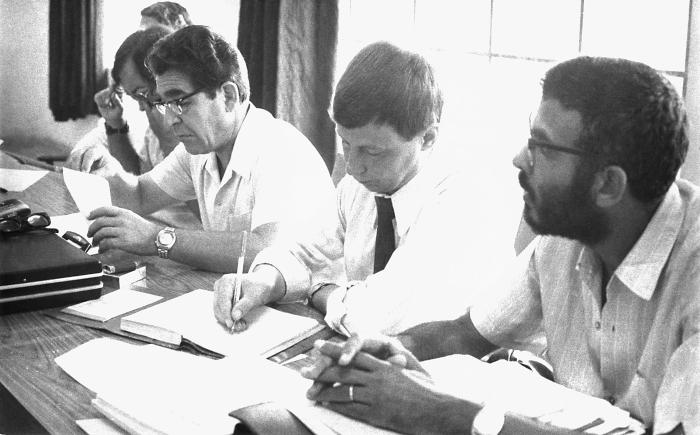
Beginning with the second seated epidemiologist from the left, included on this smallpox eradication campaign panel was an American, two Russians, and an Egyptian.During the Bangladesh smallpox eradication project, in order to maintain a consistent understanding amongst eradication team members as to the progress that was continually being achieved, monthly staff meetings were held. The significance of this transcends the obvious, but showed how the world population came together in its attempt to once and for all rid mankind of this horrible viral disease.